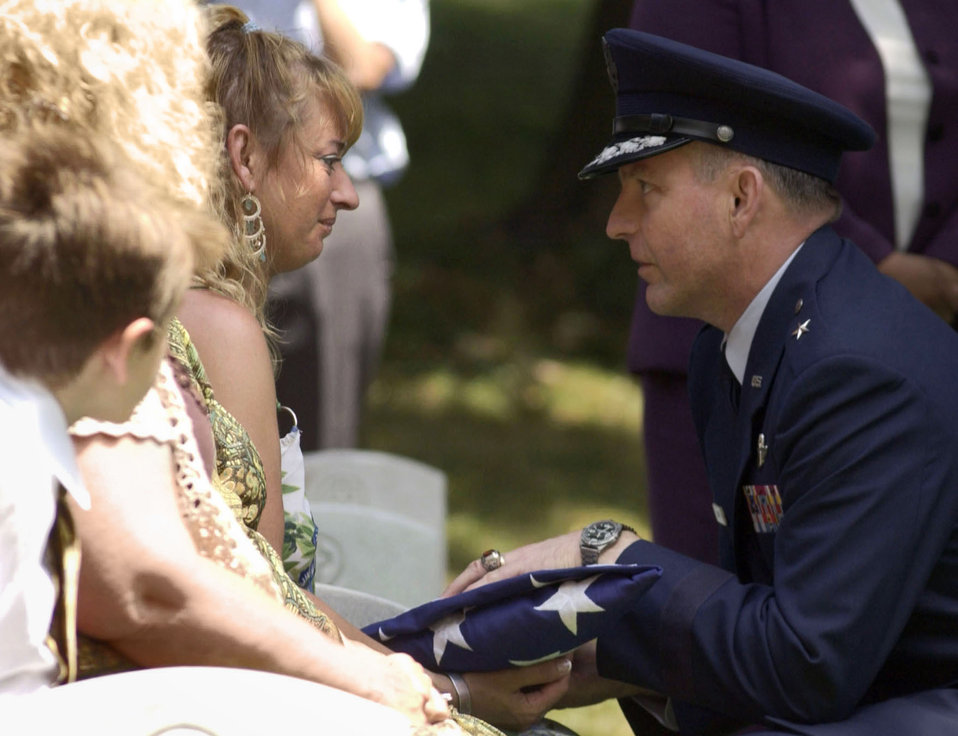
Honoring our fallen

Brig. Gen. Paul Schafer presents the U.S. flag to Angela Cooke at the funeral for her father, Staff Sgt. Calvin Cooke Jr., at Arlington National Cemetery in Arlington, Va., on Tuesday, June 20. Sergeant Cooke died in April 1972 when his aircraft was shot down in South Vietnam.